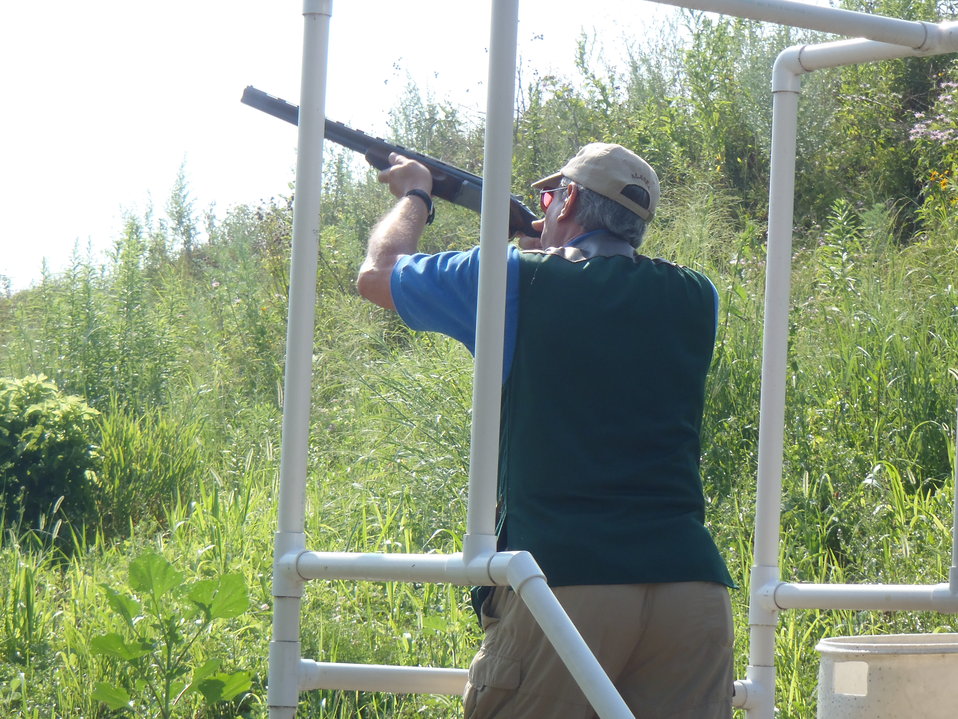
Regional Director Tom Melius.